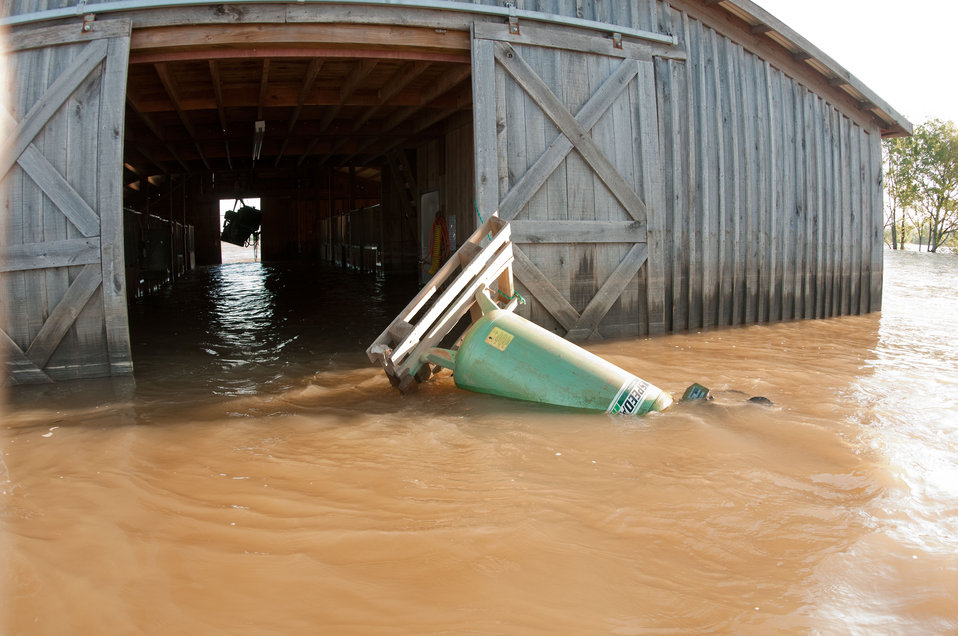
A compressor tank floats outside the barn Joe Higdon built on his ranch in the middle of President's Island. Floodwaters from the Mississippi River still cover the island with 6-12 feet of water on President’s Island near Memphis, TN on Sunday, May 15. 2011.